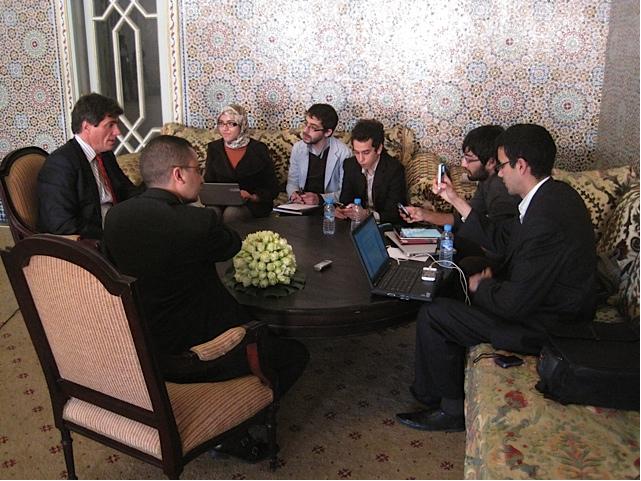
Assistant Secretary Fernandez Is Interviewed By Bloggers

Assistant Secretary for Economic and Business Affairs Jose W. Fernandez is interviewed by several bloggers from the region during the second U.S. – Maghreb Entrepreneurship Conference in Morocco, January 16-18, 2012.